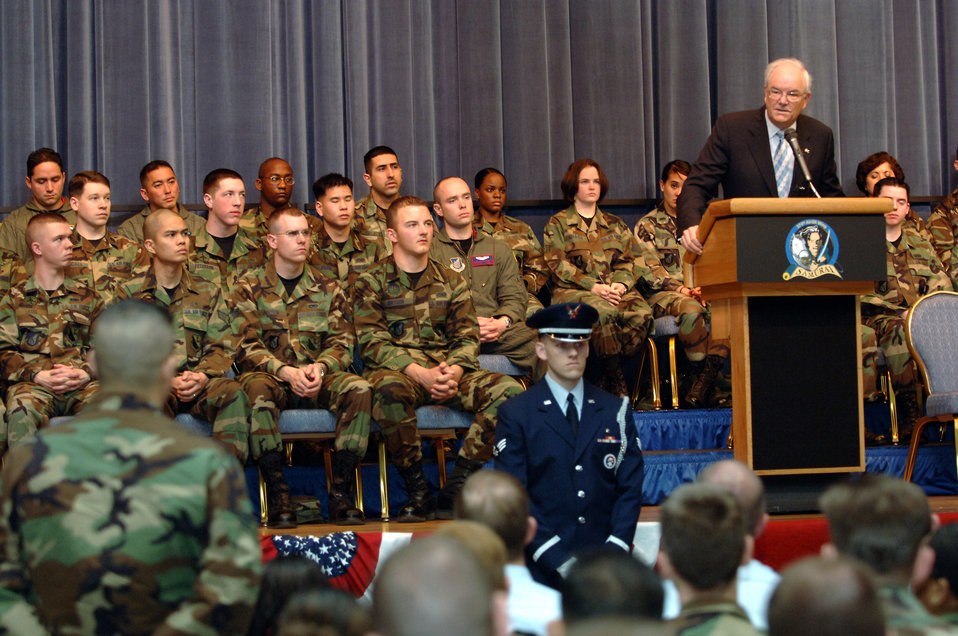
SECAF visits mainland Japan

Secretary of the Air Force Michael W. Wynne speaks to Airmen during his tour of Yokota Air Base, Japan, on Friday, March 24, 2006. Secretary Wynne spent two days at Yokota as part of his tour of bases in the Pacific theater.